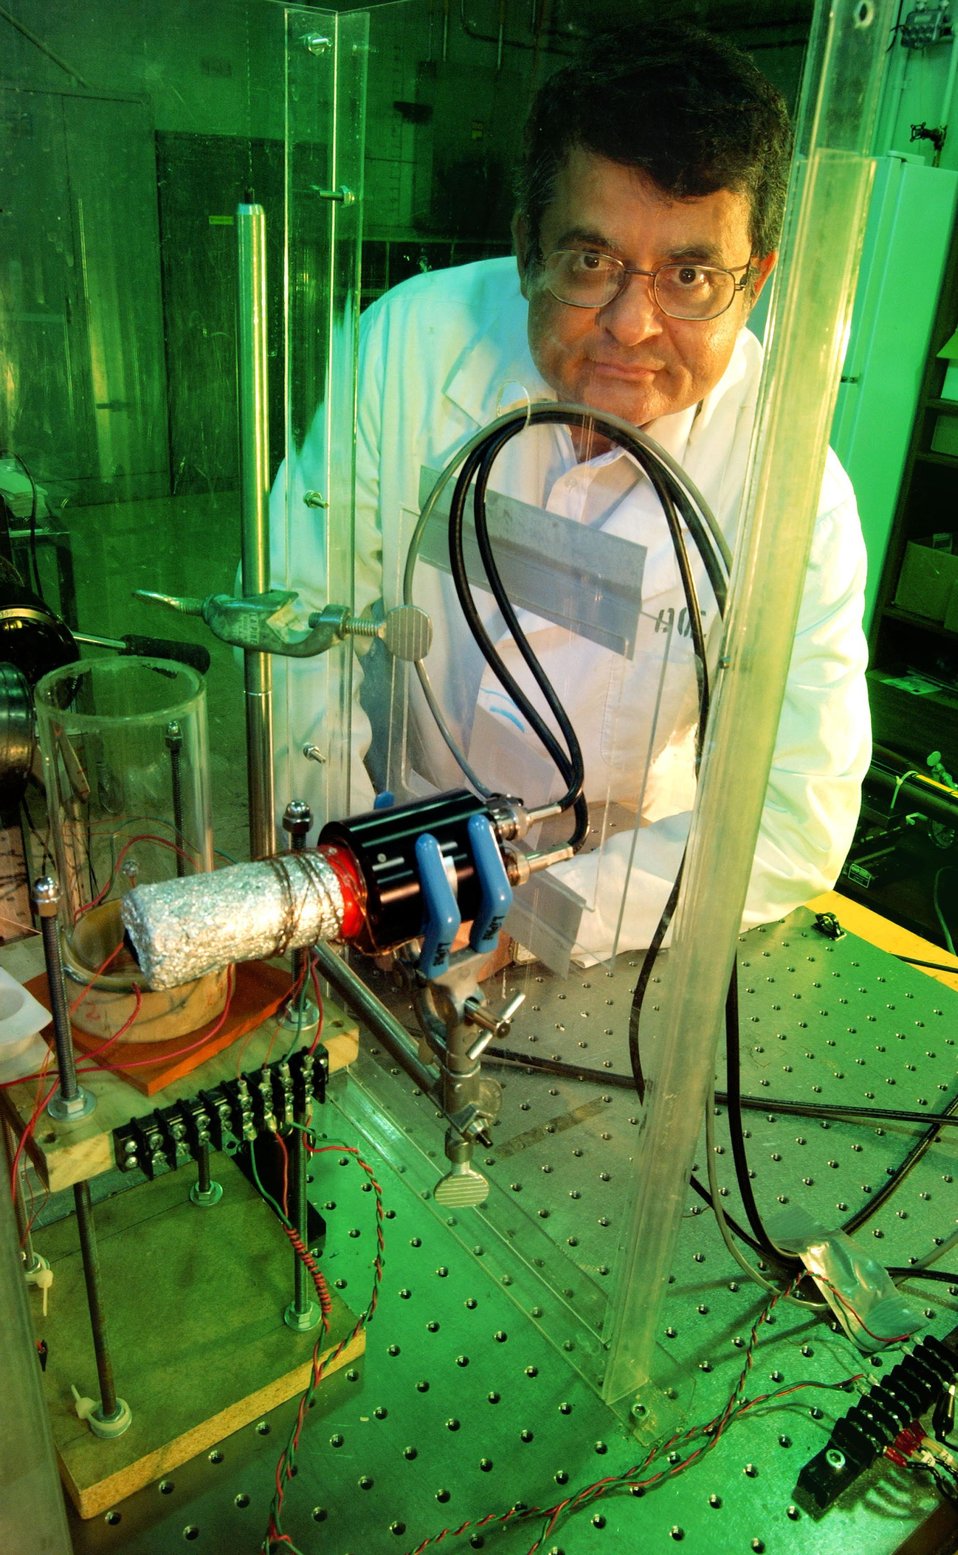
OAK RIDGE PHYSICIST RUSI TALEYARKHAN EXPERIMENTING WITH BUBBLE FUSION.

A TEAM OF ORNL SCIENTISTS HAVE OBSERVED EVIDENCE OF NUCLEAR FUSION IN A BEAKER OF DEUTERATED ACETONE. NEW EXPERIMENTS ARE BEING DESIGNED TO SUBSTANTIATE THE FINDINGS. IF 'BUBBLE FUSION' PROVES TO BE REAL IT COULD BE A MAJOR DISCOVERY, LEADING TO NEW SOURCE OF CLEAN ENERGY.